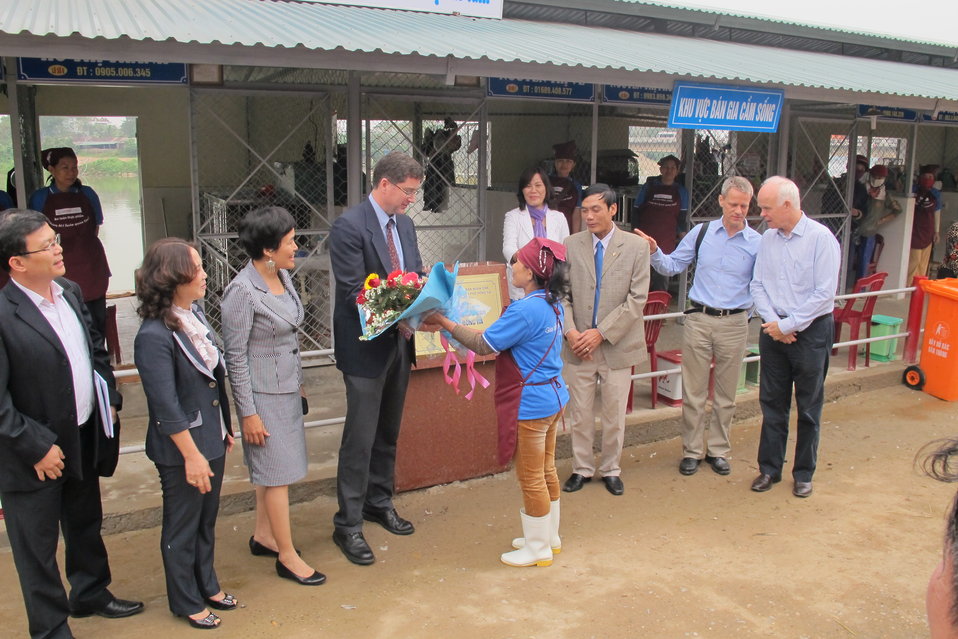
Promoting Hygiene and Sanitation at Dong Ha Poultry Market